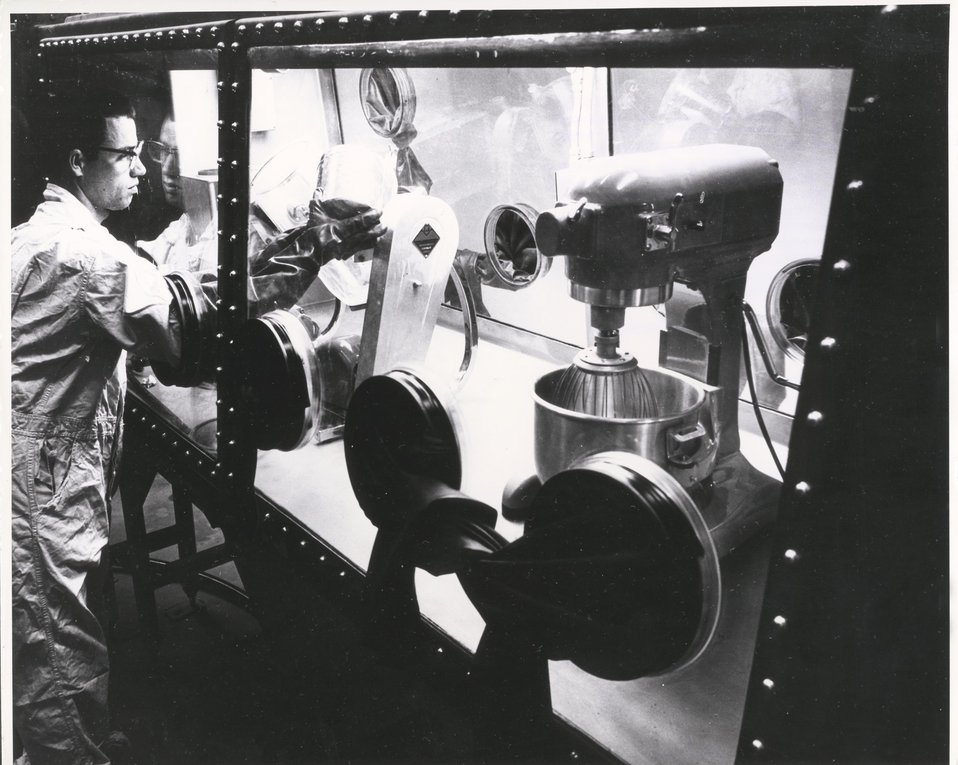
Because plutonium is highly toxic it must be handled with extreme caution. Photo shows the mixing of plutonium oxide powders in a glove-box production line at the new Plutonium Fabrication Pilot Plant at Hanford, Washington. c. 1961